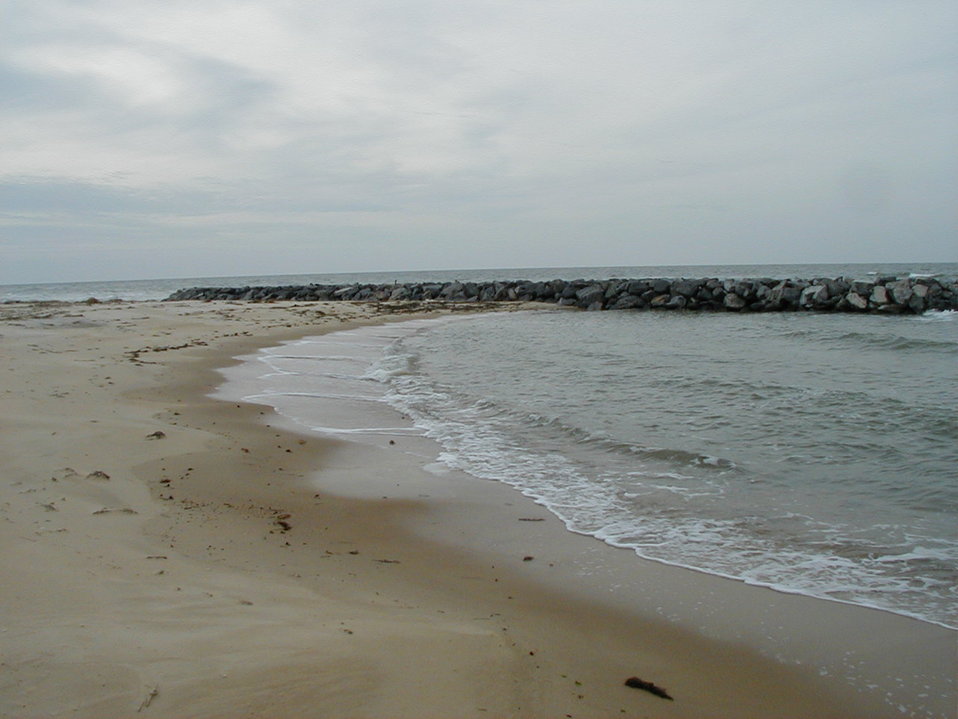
Offshore breakwater system

Offshore breakwaters are structures usually parallel to the shore and positioned in the sea that protect the shore from waves. On the Eastern Shore, they have supported plant regrowth and acted as homes for oysters, young fish and other wildlife.